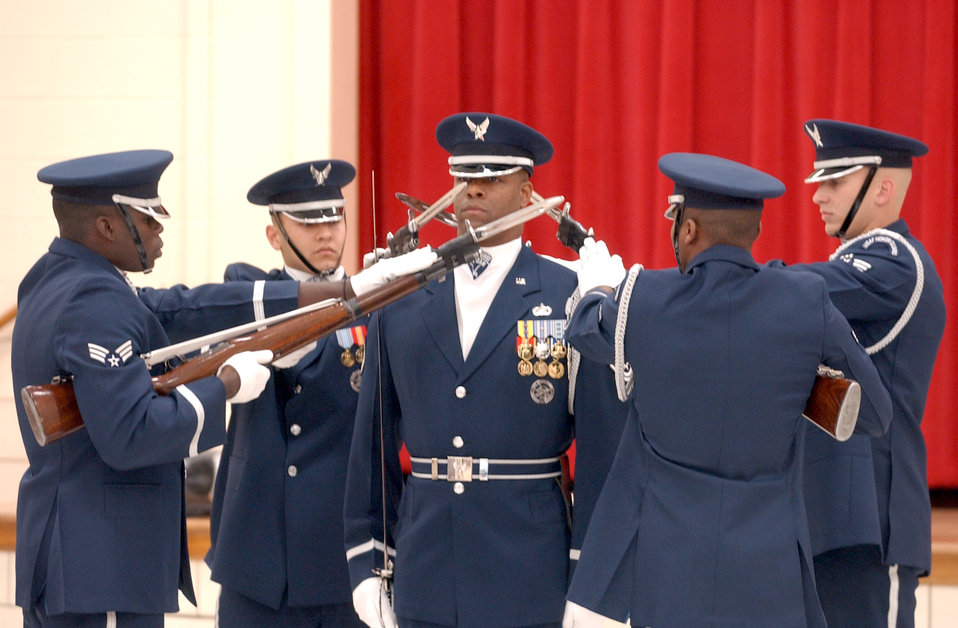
Operation Fly Straight

WASHINGTON -- Members of the U.S. Air Force Honor Guard twirled their rifles around and over Tech. Sgt Richard Osborn during an Operation Fly Straight visit to King Elementary School here Feb. 20. The program educates elementary school children about the long-term effect that drug use could have on their lives. Sergeant Osborn is the noncommissioned officer in charge of the honor guard detail. He told the children that he trusted every member of his squad and they could not perform the precise drill maneuvers if they were using drugs.